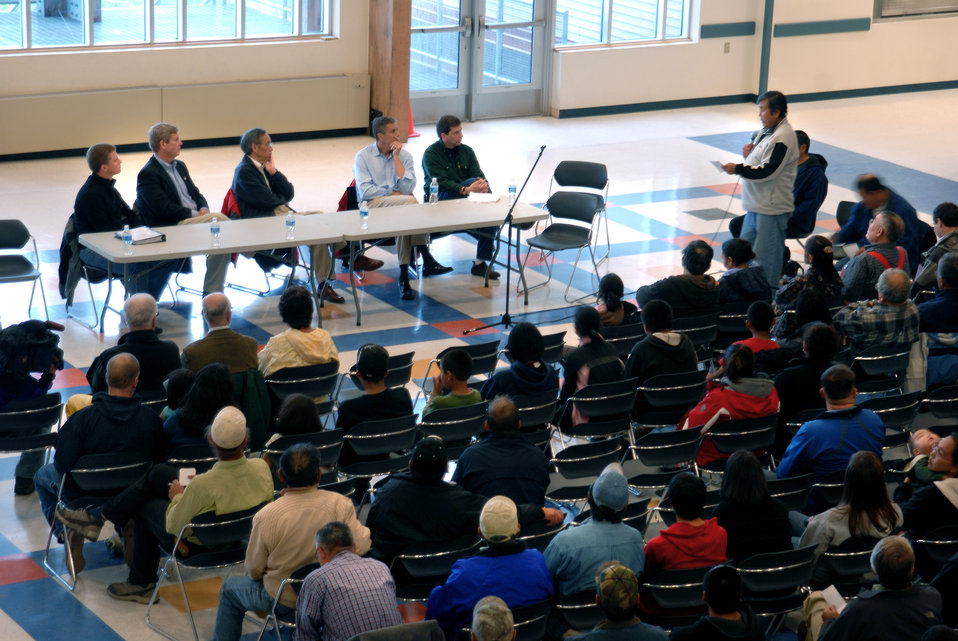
Rural Tour 4069

Rural Tour Alaska Aug. 2009